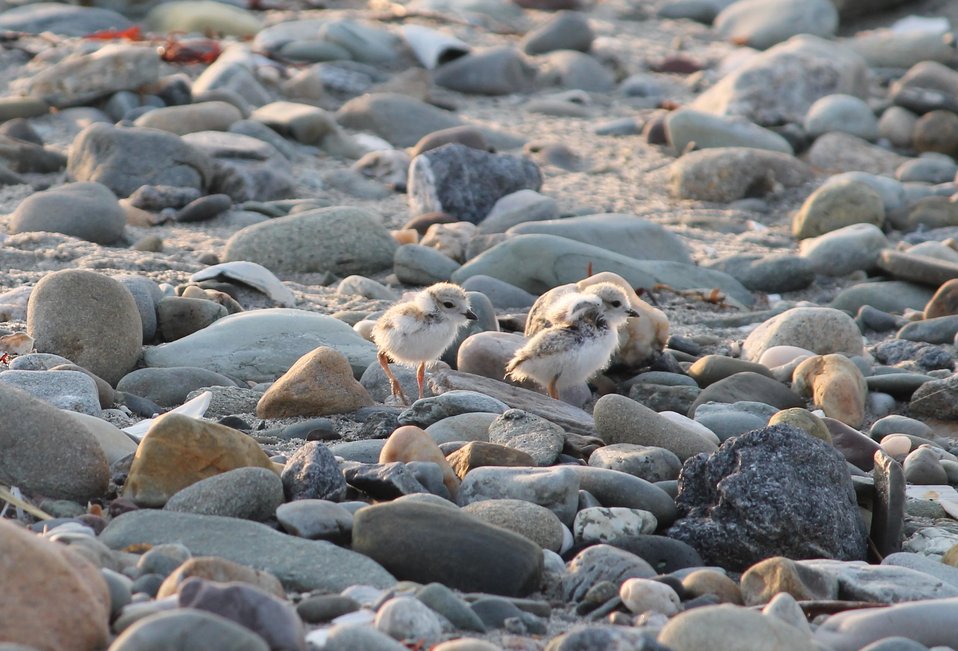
Piping Plover (RI)

Piping Plover chicks photographed at Second Beach in Middletown, Rhode Island.